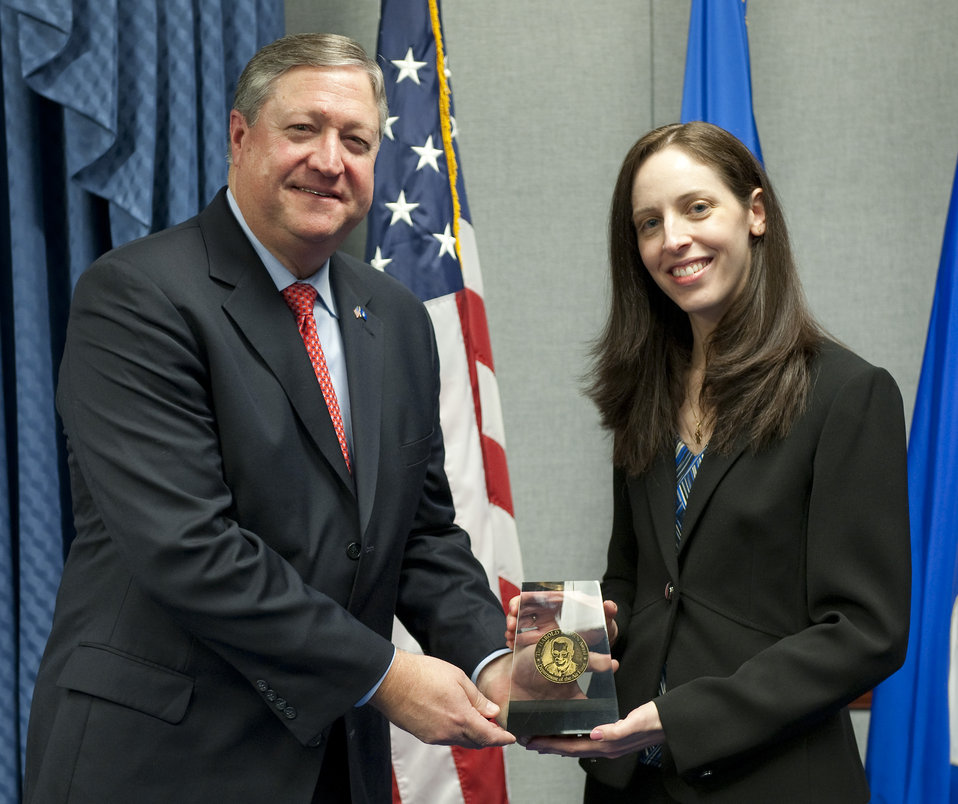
2010 Harold Brown Award

Secretary of the Air Force Michael Donley presents the 2010 Harold Brown Award to Dr. Candace Lynch during a ceremony in the Pentagon Dec. 15, 2010. The award was named for Harold Brown, a physicist who served as secretary of the Air Force from 1965 to1969. Dr. Lynch is the first female recipient of the award since its inception in 1969.